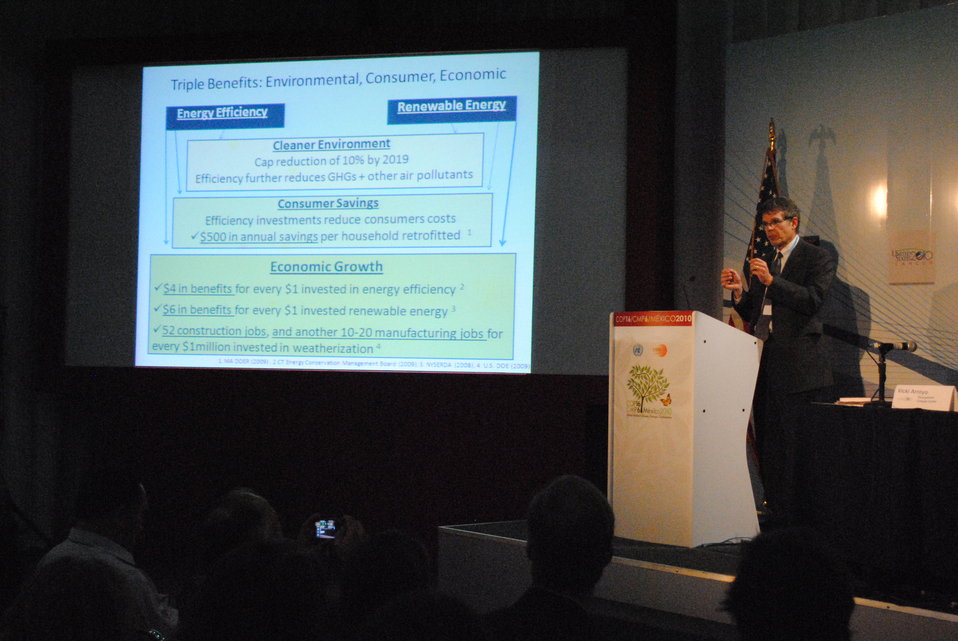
J. Jared Snyder Addresses the U.S. Center

New York State Department of Environmental Conservation Assistant Commissioner J. Jared Snyder addresses the U.S. Center at COP-16 in Cancun, Mexico, on December 6, 2010.